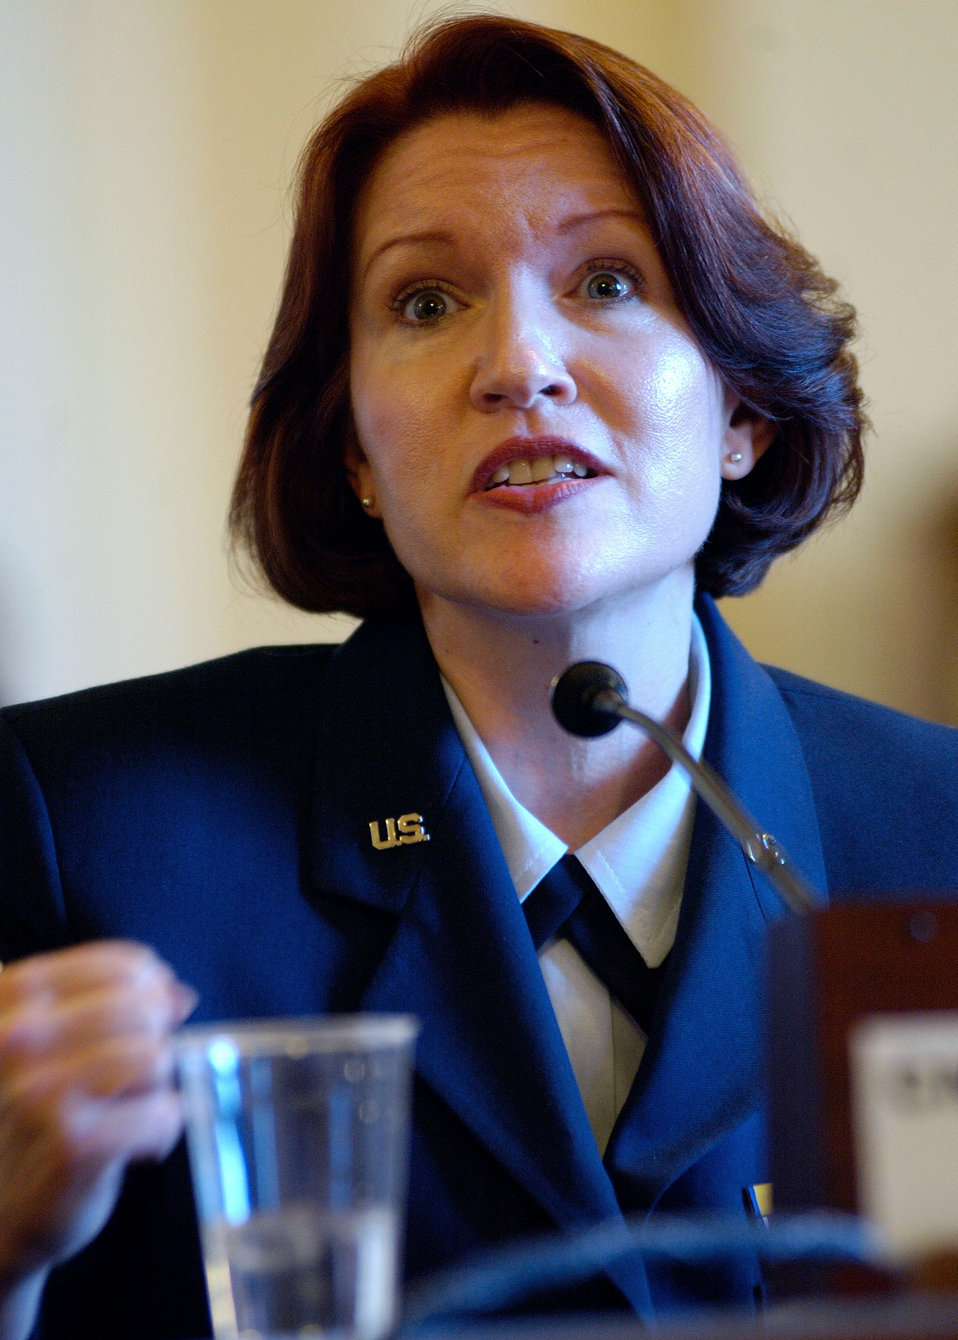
Transition help vital, chief tells Congress

WASHINGTON D.C. -- Chief Master Sgt. Elizabeth S. Schouten of the U.S. Air Force Band talks about her experience with the Transition Assistance Program at a hearing on the state of veterans' employment during a session of the House Committee on Veterans' Affairs on Feb. 5.